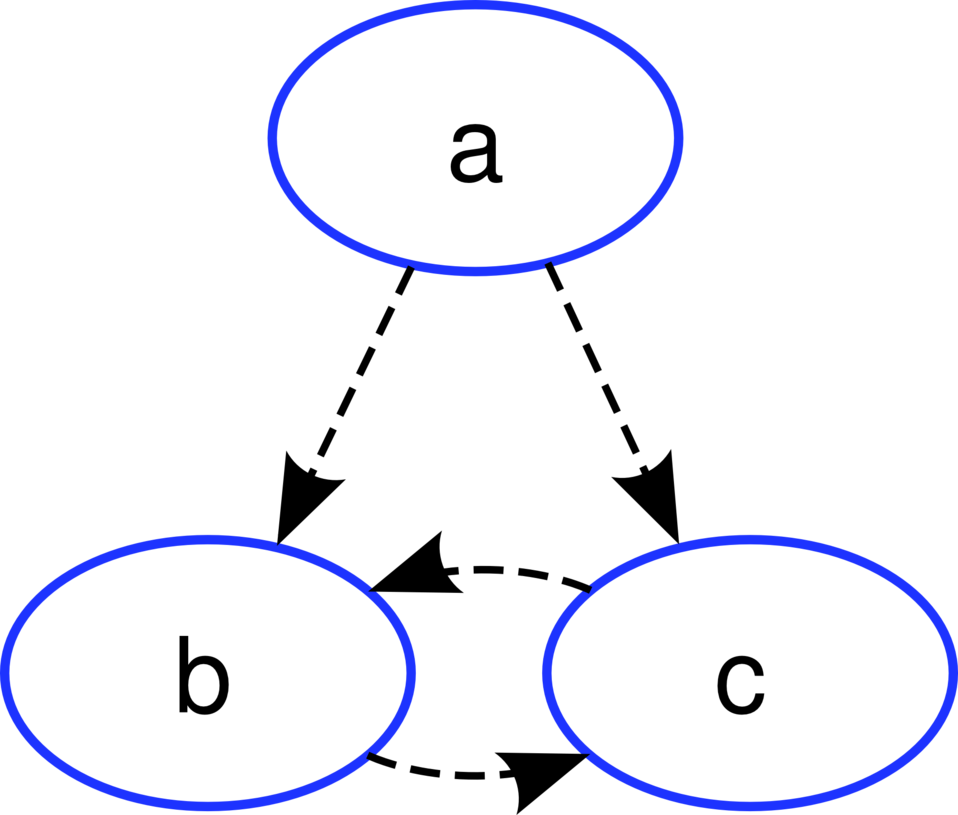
Deutsch: Kleiner irreduzierbarer Kontrollflussgraph